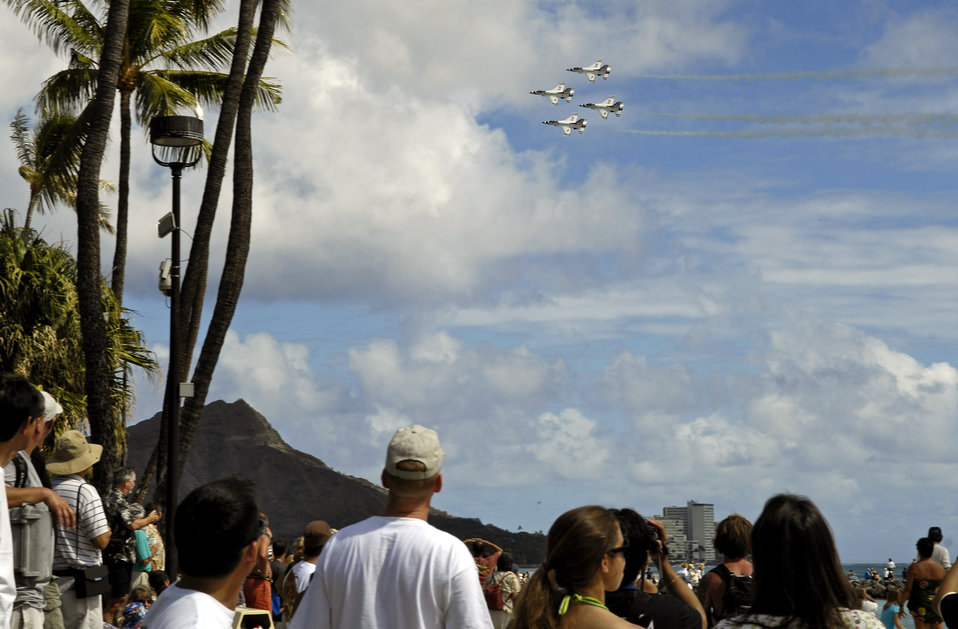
Thunderbirds fly above island paradise

Spectators watch as the Air Force Thunderbirds demonstration team perform their aerial demonstration practice Sept. 13 in Waikiki, Hawaii. The Thunderbirds performed the practice session to prepare for their show Sept. 15 as part of Air Force Week Honolulu.